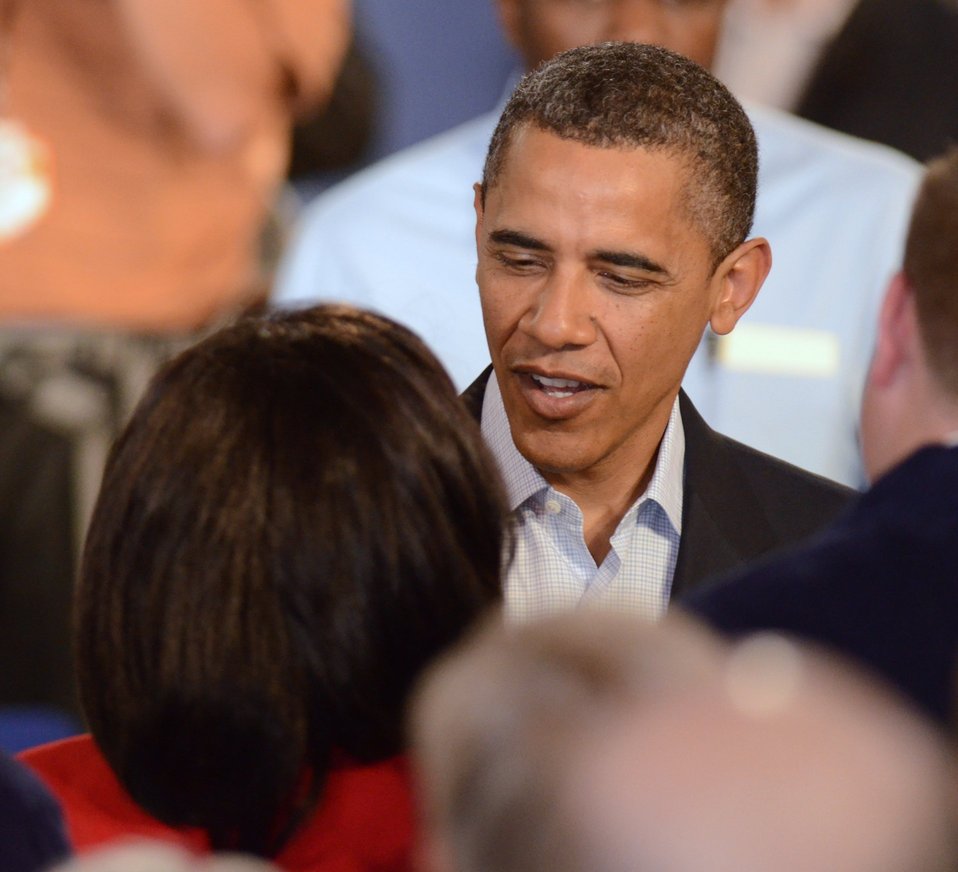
President Barack Obama shakes hands with members of the audience at the Northeast Iowa Community College, for a White House Rural Economic Forum on Tuesday, Aug. 16, 2011. The President’s visit will focus on agriculture’s contribution to the national economy, and how to create more jobs in rural America.